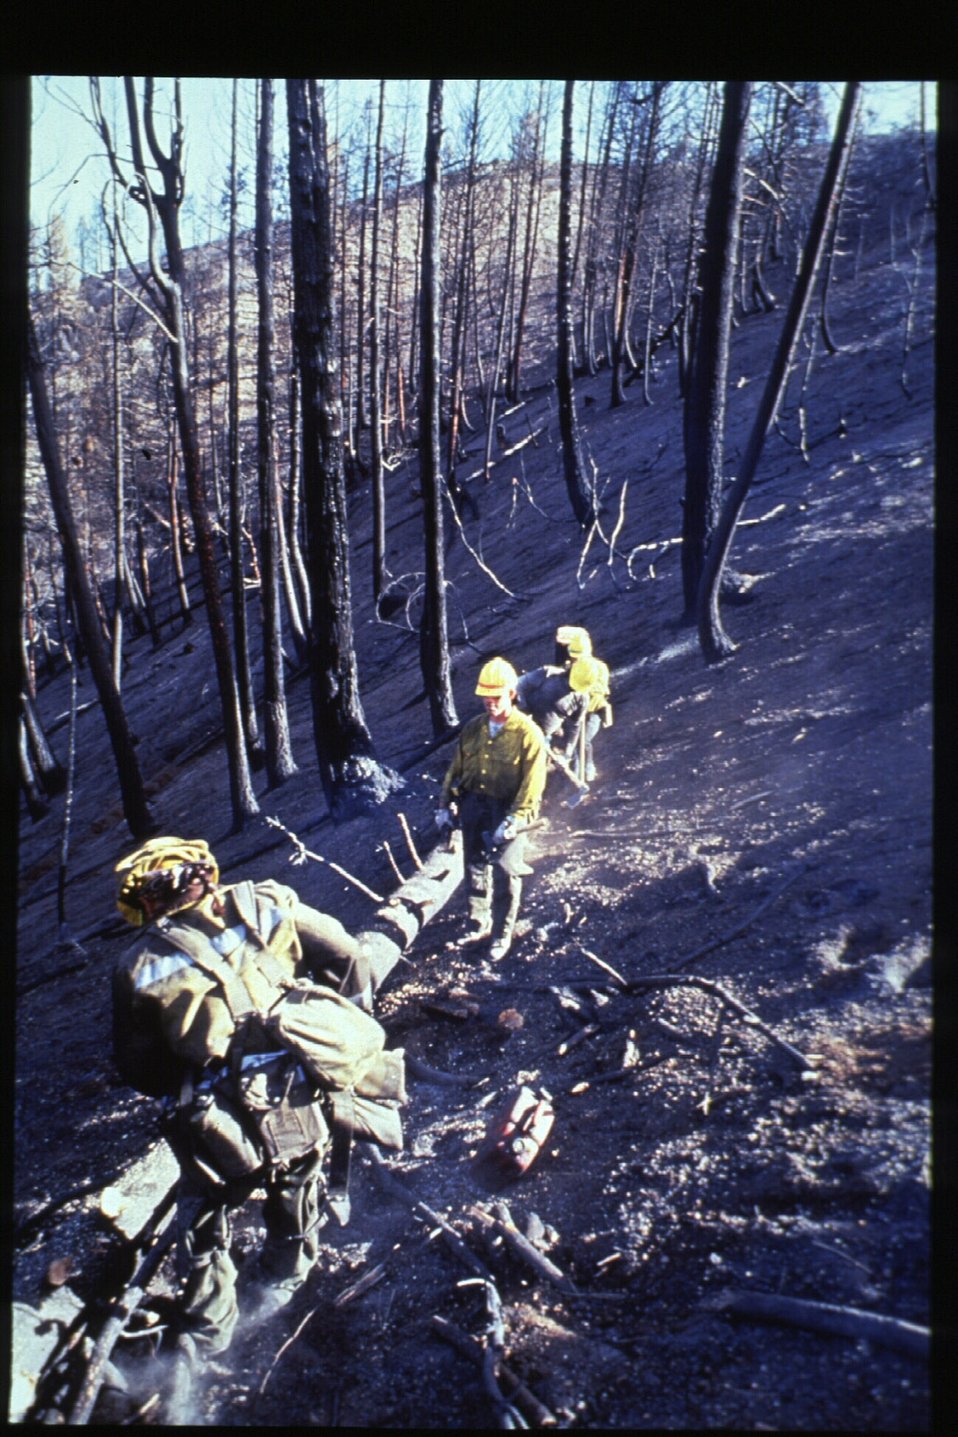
Boise Foothills Fire Danskin Mountains and South Fork of Boise River Wild Fire Fighters Four River Field Office LSRD Lower Snake River District